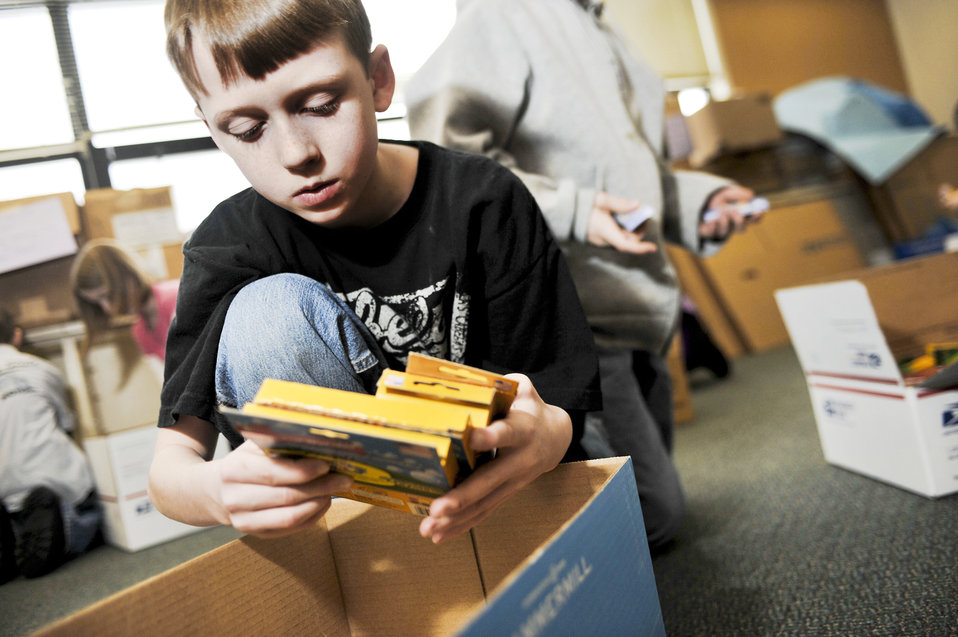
Elemendorf children lend helping hand

Michael Diller, grabs several boxes of markers to pack one of the boxes Feb. 25, 2010, that will be sent to students in Konar River Valley, Afghanistan. Michael is fourth-grade student at Aurora Elementary School at Elmendorf Air Force Base, Alaska.